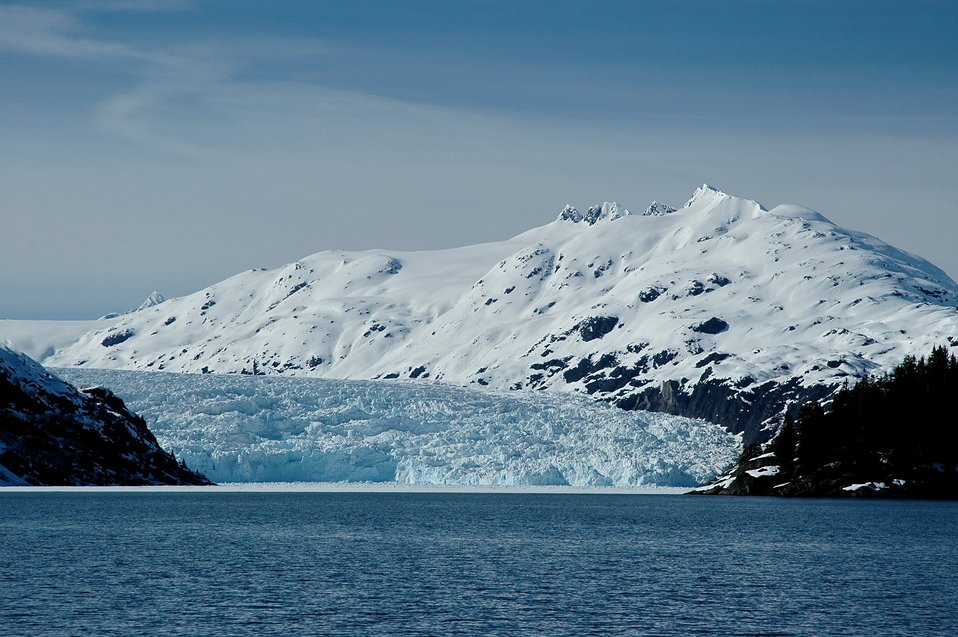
One of many glaciers entering the sea in Chugach National Forest.